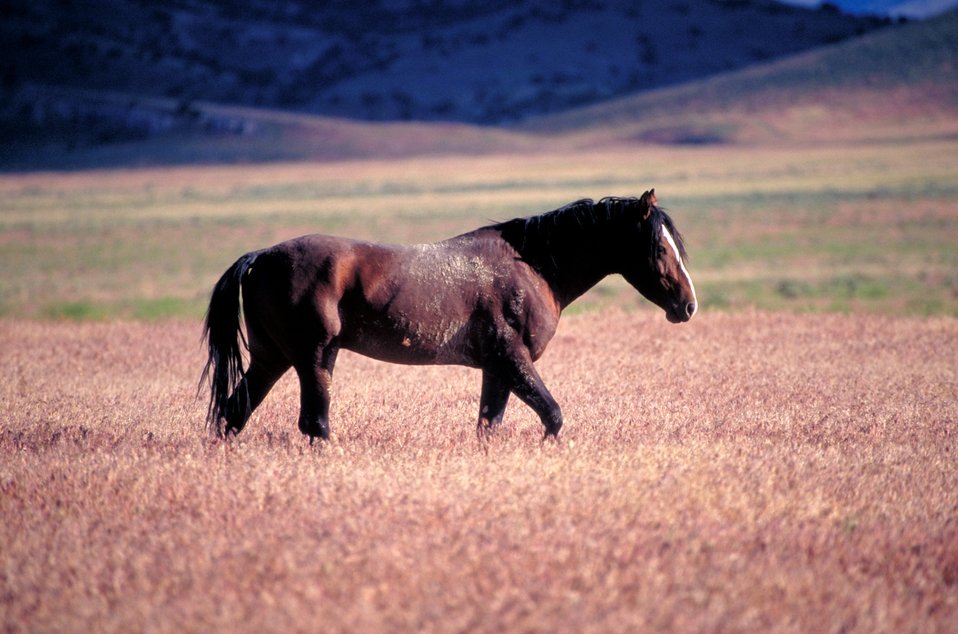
Onaqui Herd near Dugway, Utah.